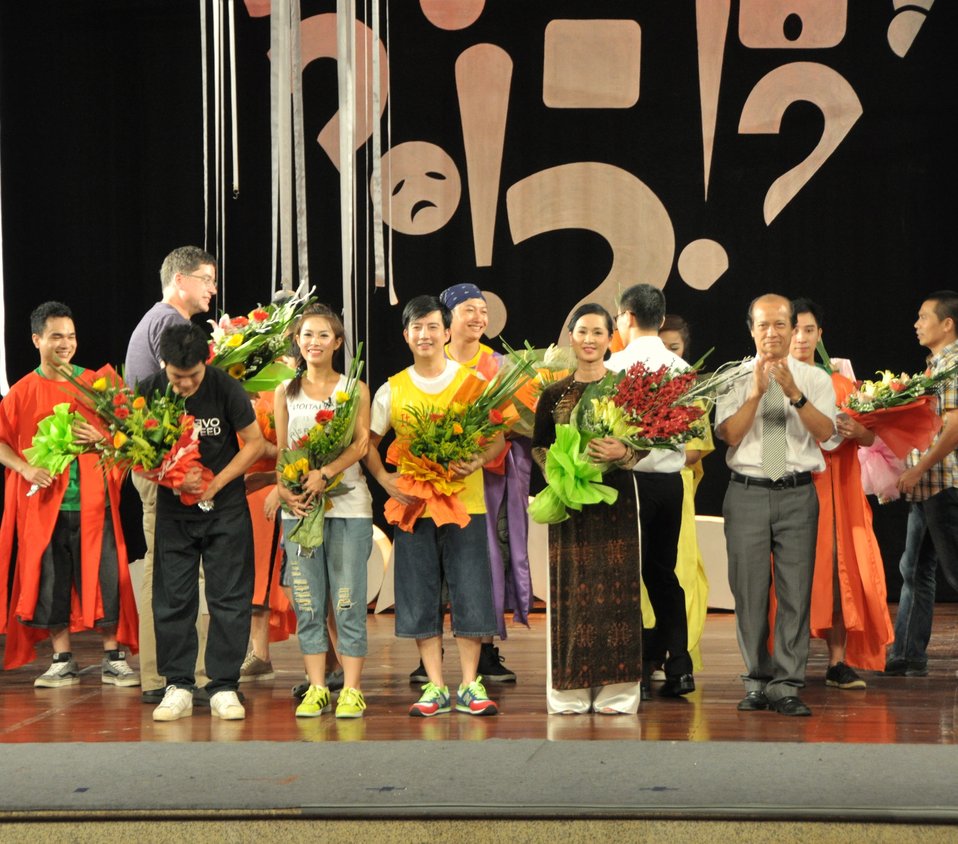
PEPFAR Musical Questions and Exclamations